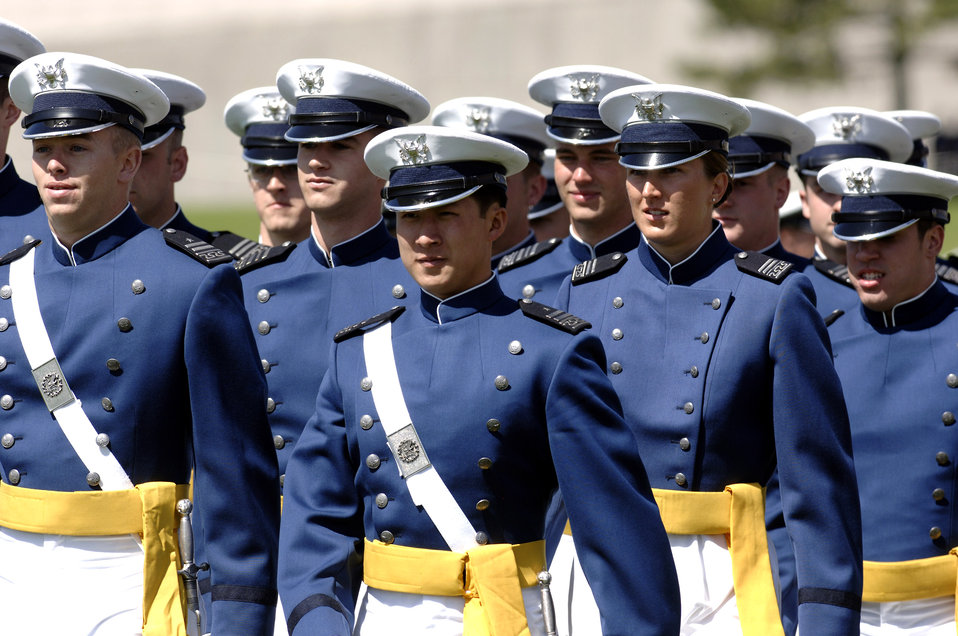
Parade preps Class of 2007 for graduation

Senior cadets march during the 2007 Graduation Parade May 29 at the U.S. Air Force Academy in Colorado. The graduation for the U.S. Air Force Academy's Class of 2007 will be held at 10 a.m. May 30 at Falcon Stadium. Secretary of Defense Dr. Robert M. Gates will be the guest speaker. The academy offers a four-year program of instruction and experience designed to provide cadets the knowledge and character essential for leadership, and the motivation to serve as Air Force career officers.